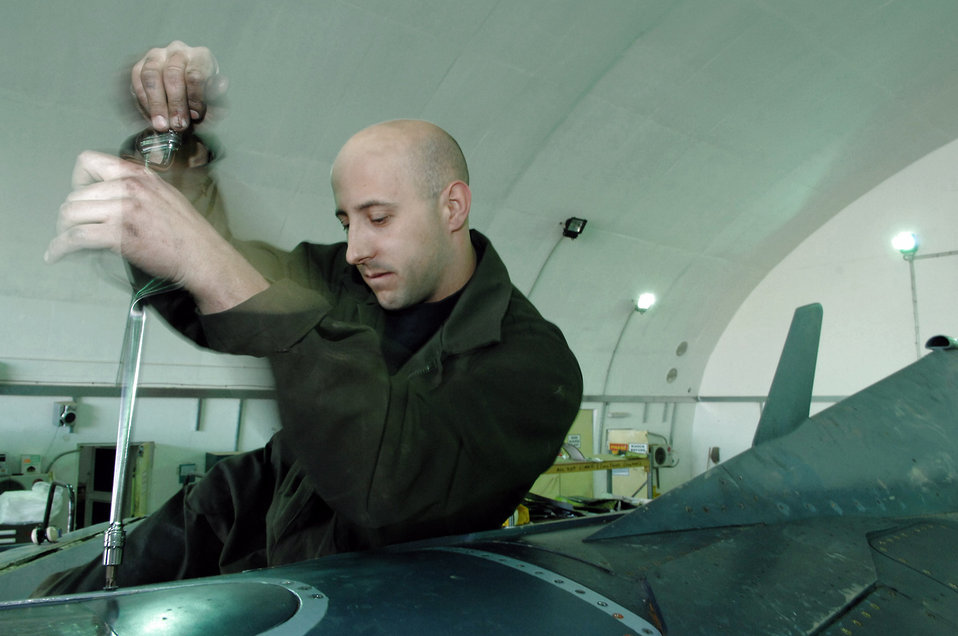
Tune-up time

Tech. Sgt. Robert Fredenberg reinstalls the refueling panel after fixing a small dent Feb. 22 at Balad Air Base, Iraq. The dent was caused during an in-flight refueling. During a 300-flight hour inspection all panels are removed and inspected for cracks and dents, all pieces are repaired, if needed, before reinstallation. Sergeant Fredenberg is a 332nd Expeditionary Maintenance Squadron crew chief deployed from the Wisconsin National Guard.